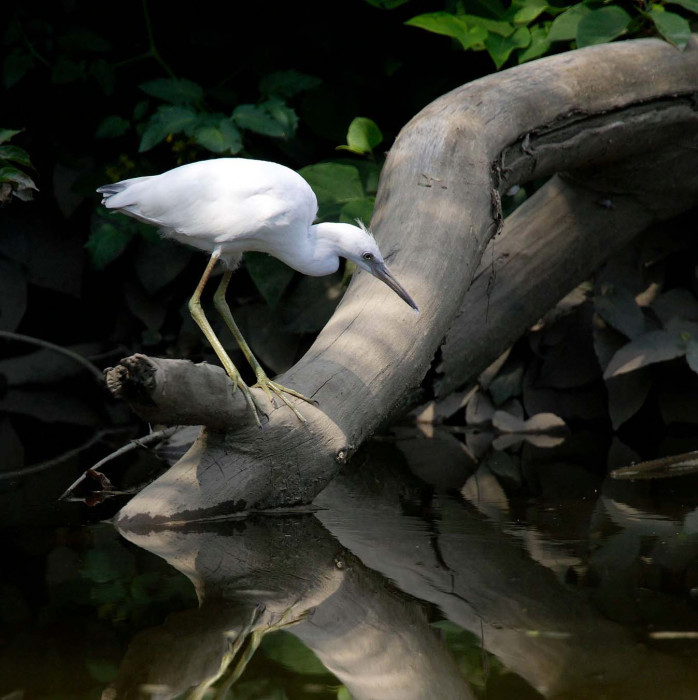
little blue heron

Juvenile little blue heron fishing
John Heinz National Wildilfe Refuge, PA